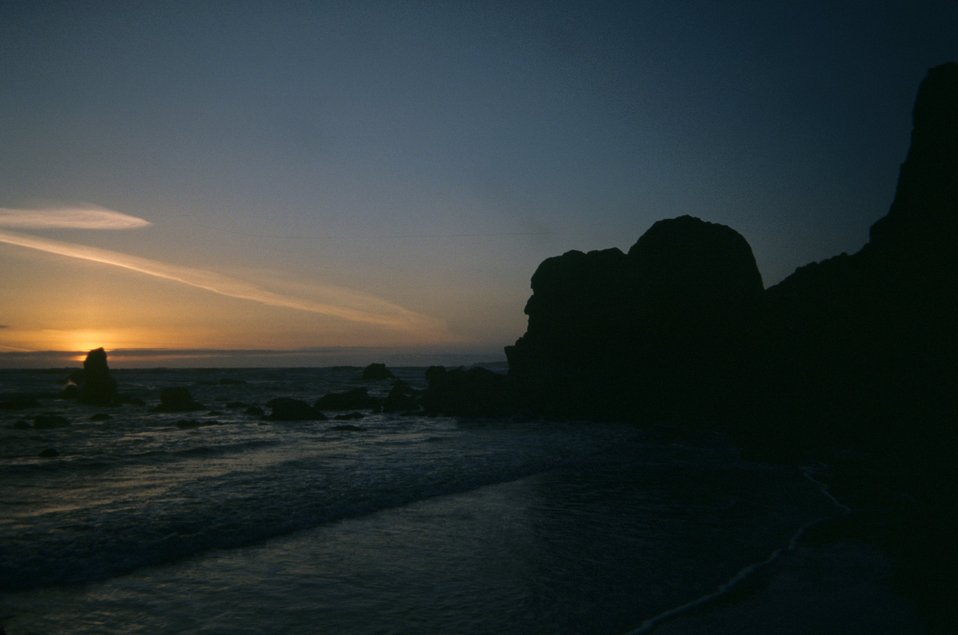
Dillon Beach